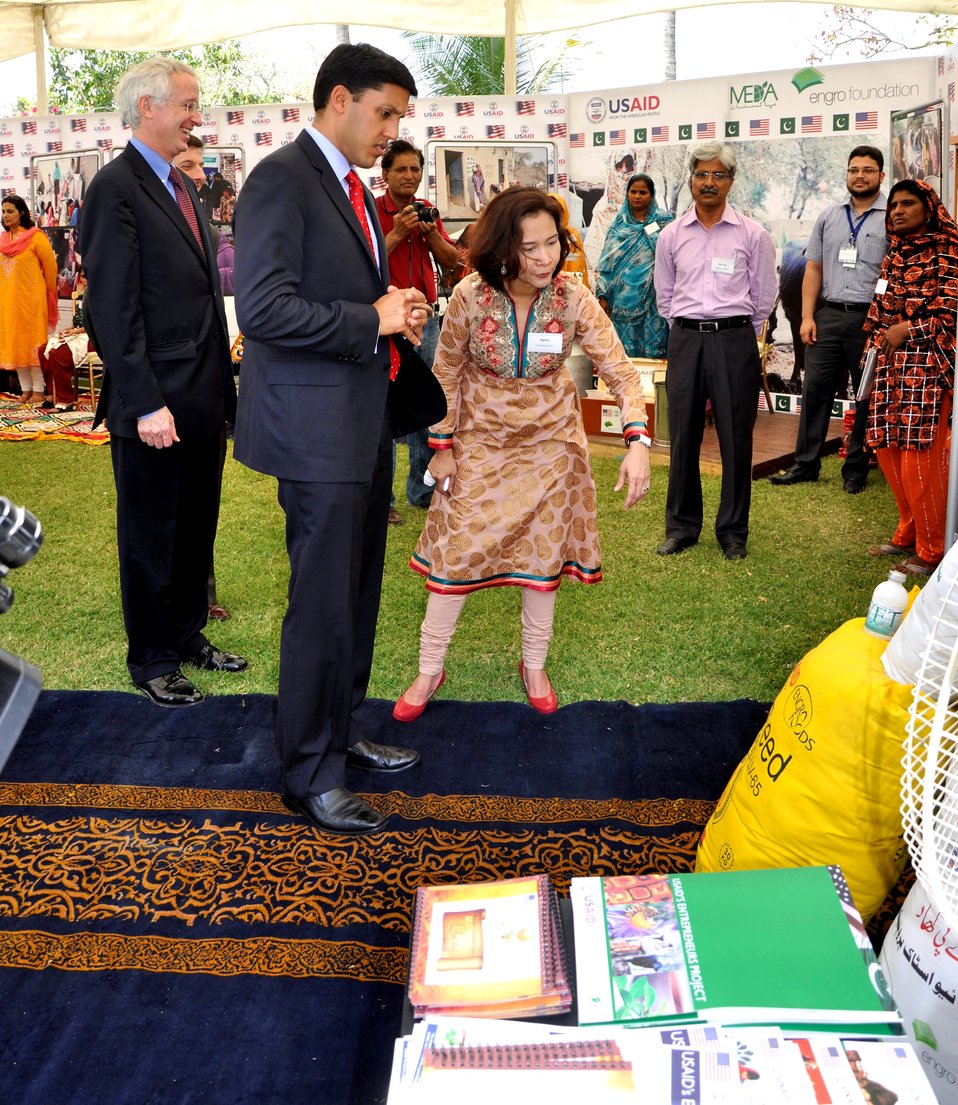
Chief of Party Entrepreneurs project, Agnes Luz while briefing project details